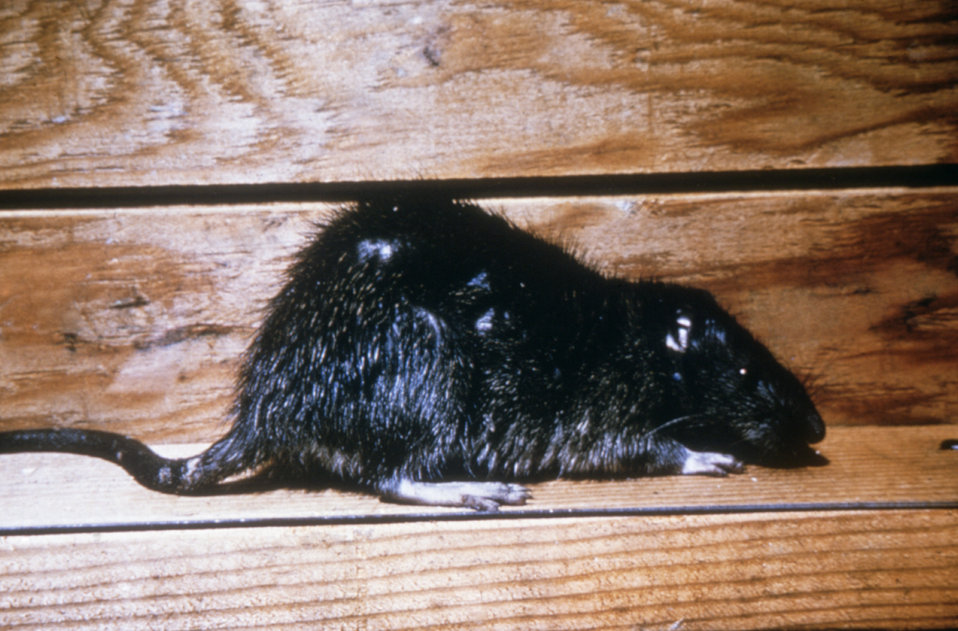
This is an image of a Norway rat, Rattus norvegicus, also known as the brown rat, house rat, and sewer rat.